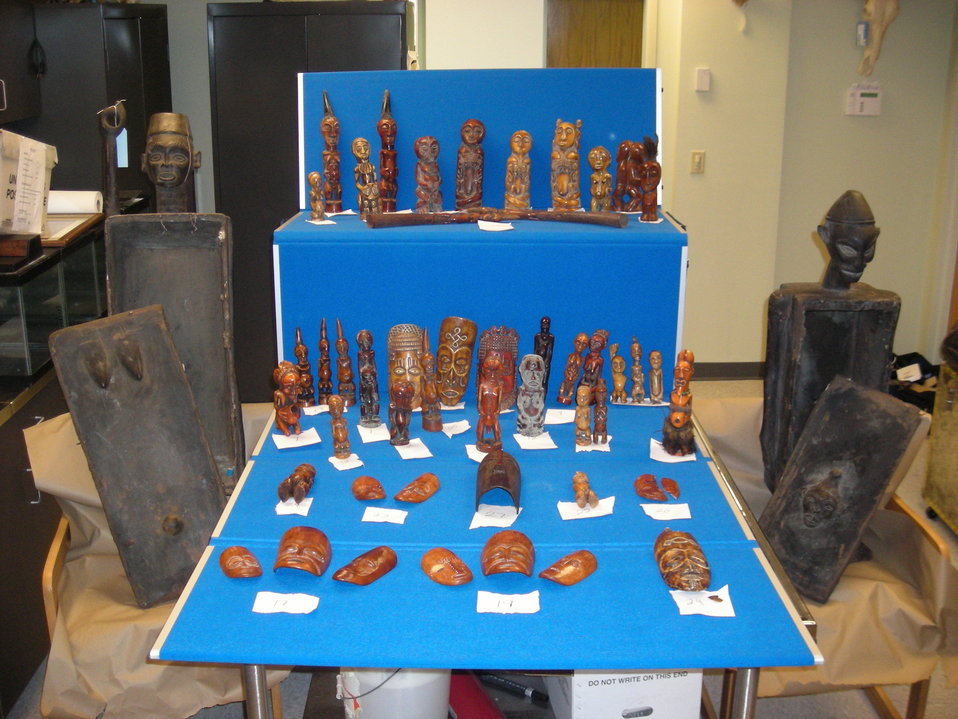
Photo of the Week - Seized ivory artifacts

Photo of the Week - 03/08/11

Ivory disguised as African artifacts that was seized during a covert investigation. Credit: USFWS

The final two defendants among six convicted of illegally importing elephant ivory disguised as African handicrafts have been sentenced to prison. Kemo Sylla and Mamadi Doumbouya were sentenced to 10 months and 14 months incarceration, respectively, for their felony convictions under the Lacey Act, which, together with the U.S. Endangered Species Act, prohibits the sale or transportation of protected wildlife, including elephant ivory.

Department of Justice news release: www.justice.gov/usao/nye/pr/2011/2011mar03.html